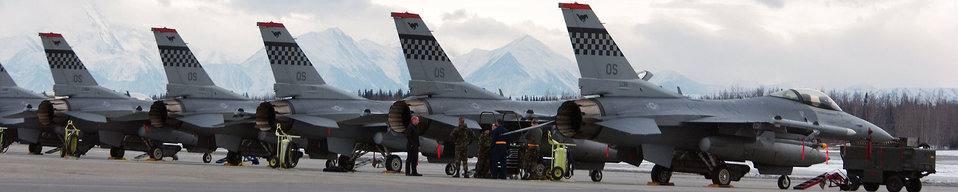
Red Flag-Alaska pilots engage in realistic combat scenarios

F-16 Fighting Falcons sit on the tarmac late into the evening April 1 at Eielson Air Force Base, Alaska. Aircraft gathered together for Red Flag-Alaska 08-2. These aircraft are assigned to the 36th Fighter Squadron, Osan Air Base, Korea.